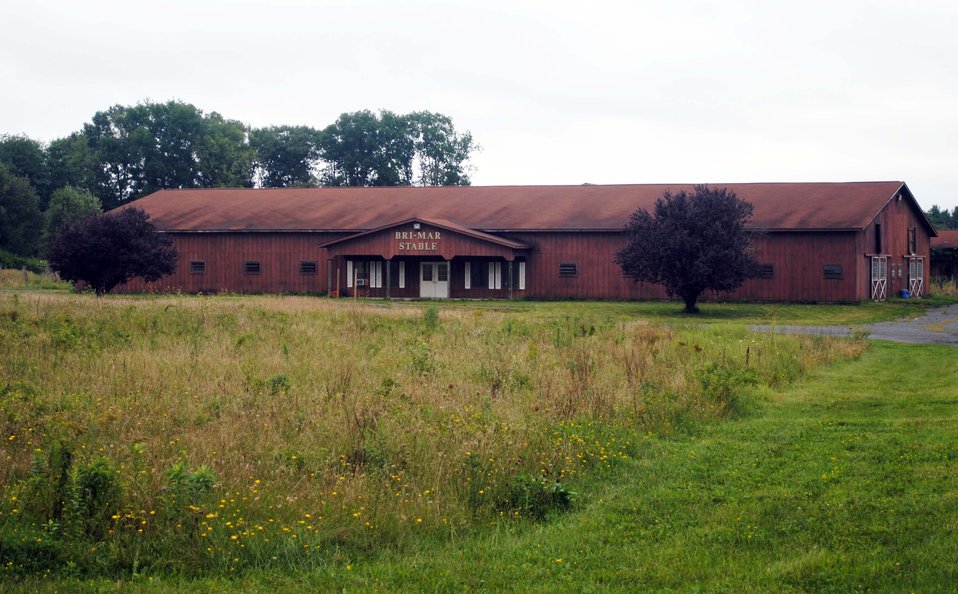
Bri-Mar Stables

An abandoned horse stable at the Fort River Division of the Silvio O. Conte National Wildlife Refuge, Hadley, MA.